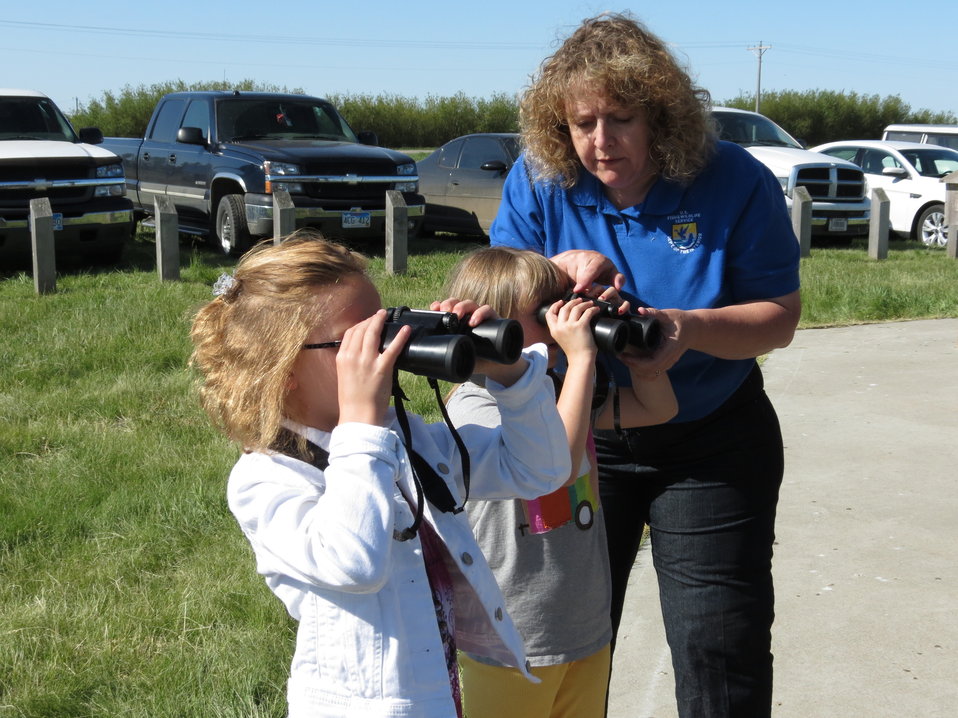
Kites in Flight 2012

Teaching how to use binoculars so they can go bird watching on one of our trails.